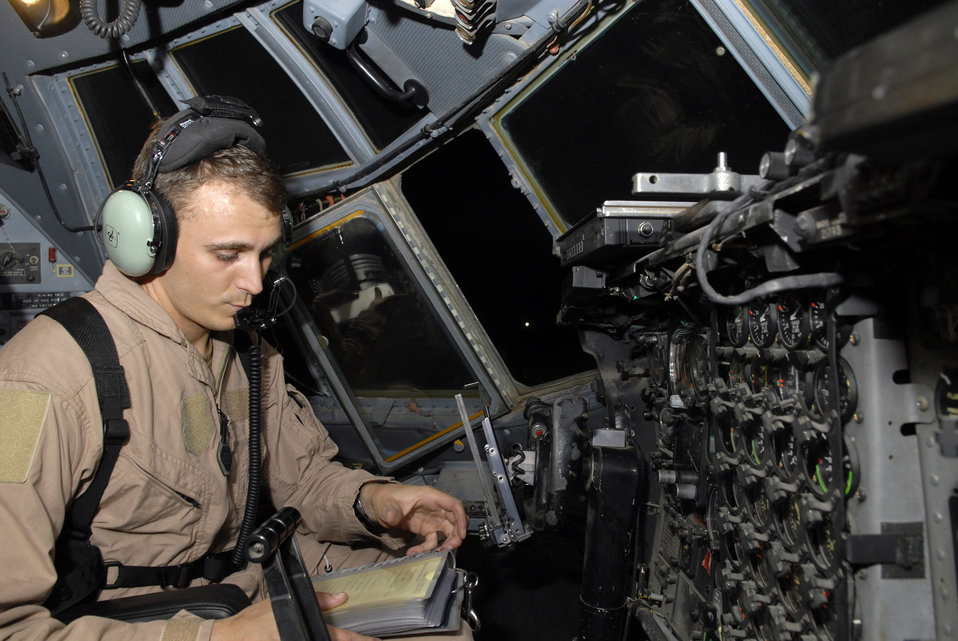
Getting it right, before the flight

Tech. Sgt. James Brady runs through a startup checklist on a C-130 Hercules at Balad Air Base, Iraq, Oct. 17. It is up to Sergeant Brady, as the flight engineer, to ensure everything on the aircraft is properly functioning and configured. He is assigned to the 777th Expeditionary Airlift Squadron and is deployed from Little Rock Air Force Base, Ark.